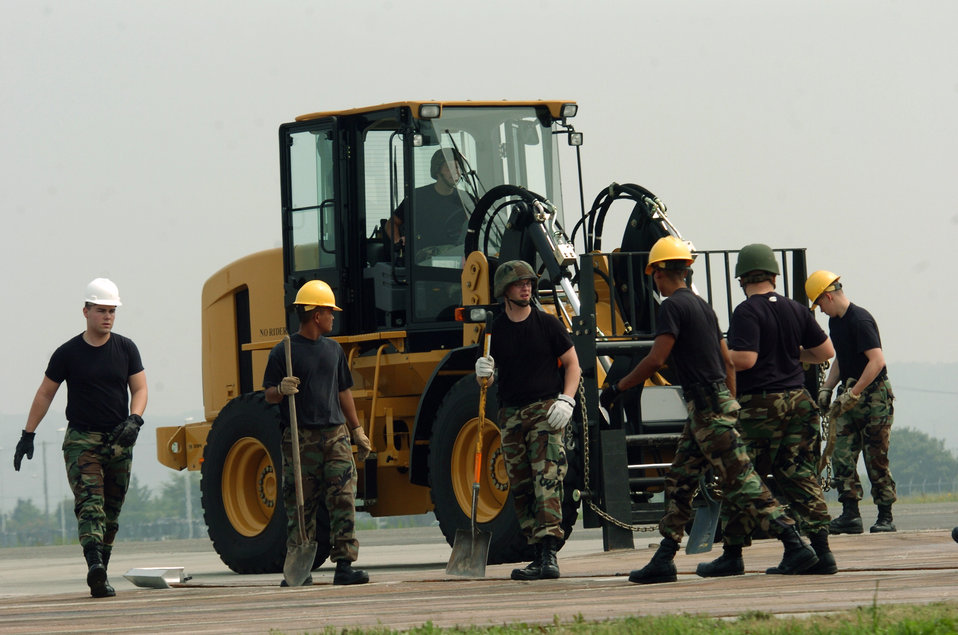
Running fiber

YOKOTA AIR BASE, Japan -- Airmen of the 374th Civil Engineer Squadron finish placing a fiberglass mat during airfield damage repair training on the flightline here. During the training, the Airmen simulated drilling holes into the runway to secure the mats. The mats provide a protective surface for aircraft landing in austere locations. The Airmen are trained to deploy into bare-base locations, assess airfield capabilities, prepare aircraft landing areas, clear obstacles, install emergency airfield lighting systems and repair airfield damage.